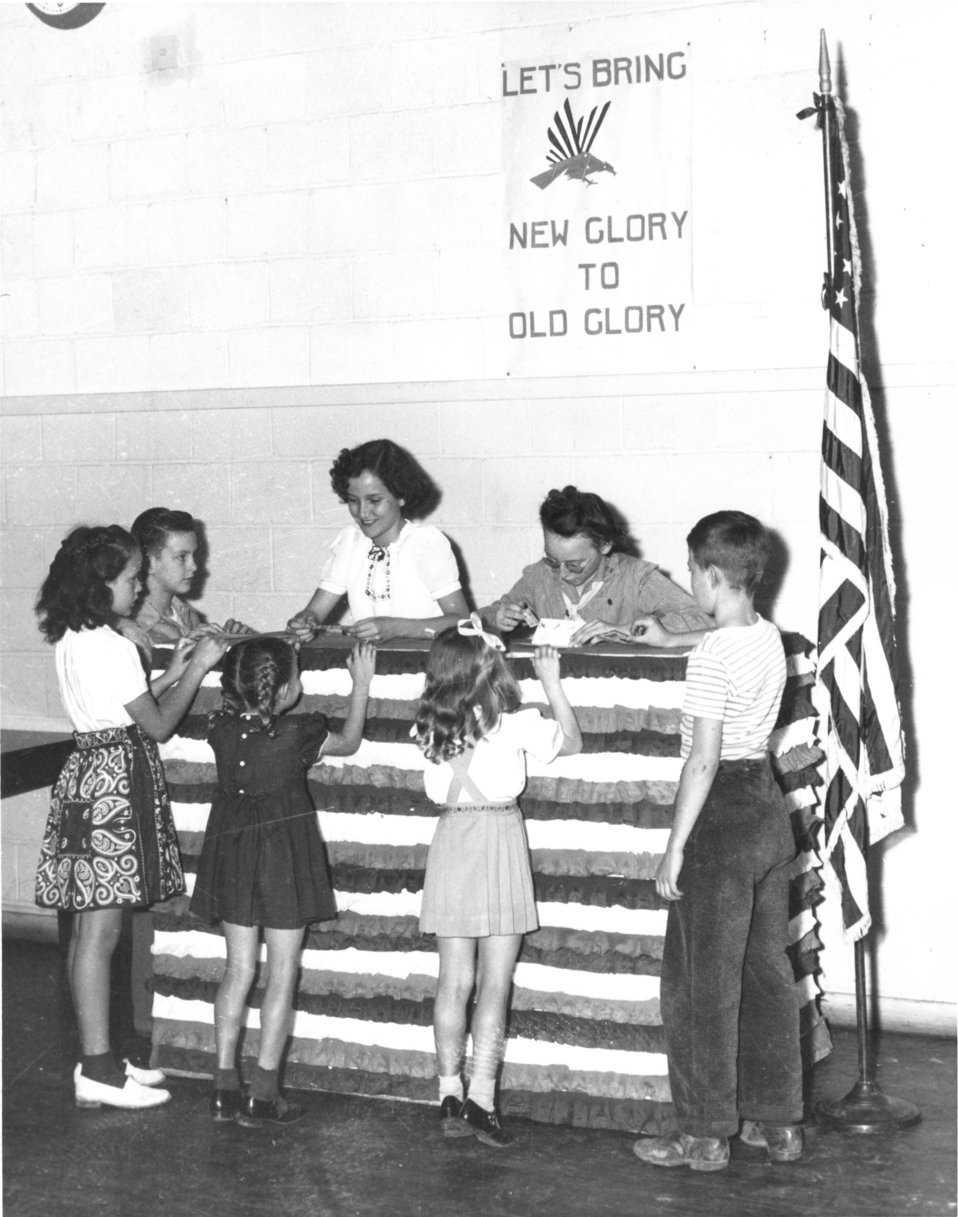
Daily Life at Oak Ridge